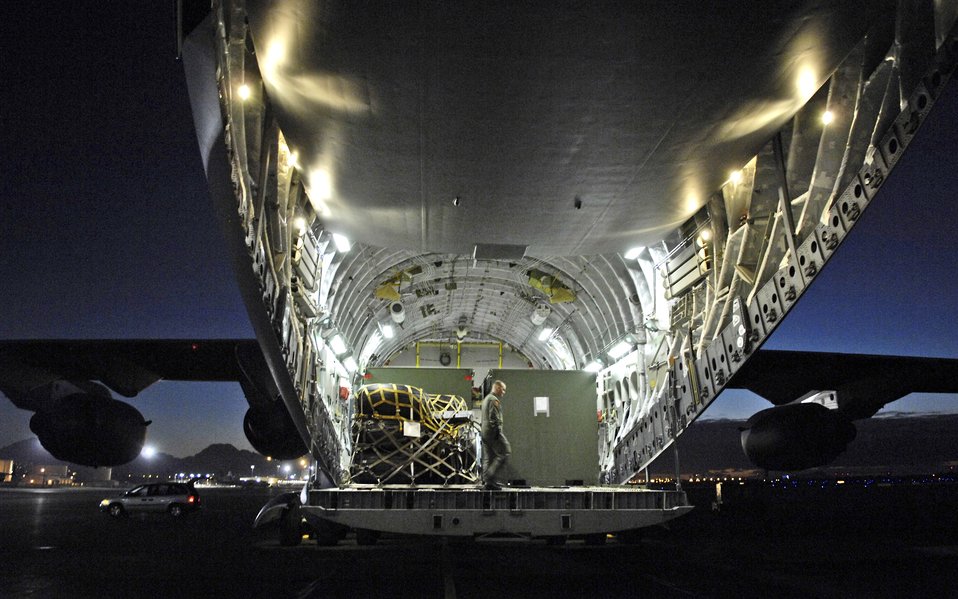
C-17 delivers strategic capability

Staff Sgt. Jason Scaffidi conducts a final check of equipment loaded on a C-17 Globemaster III Jan. 25 at Hickam Air Force Base, Hawaii. Sergeant Scaffidi is a loadmaster with the 535th Airlift Squadron. The C-17 can take off and land on runways as short as 3,500 feet and only 90 feet wide. Even on such narrow runways, the C-17 can turn around using a three-point star turn and its backing capability.